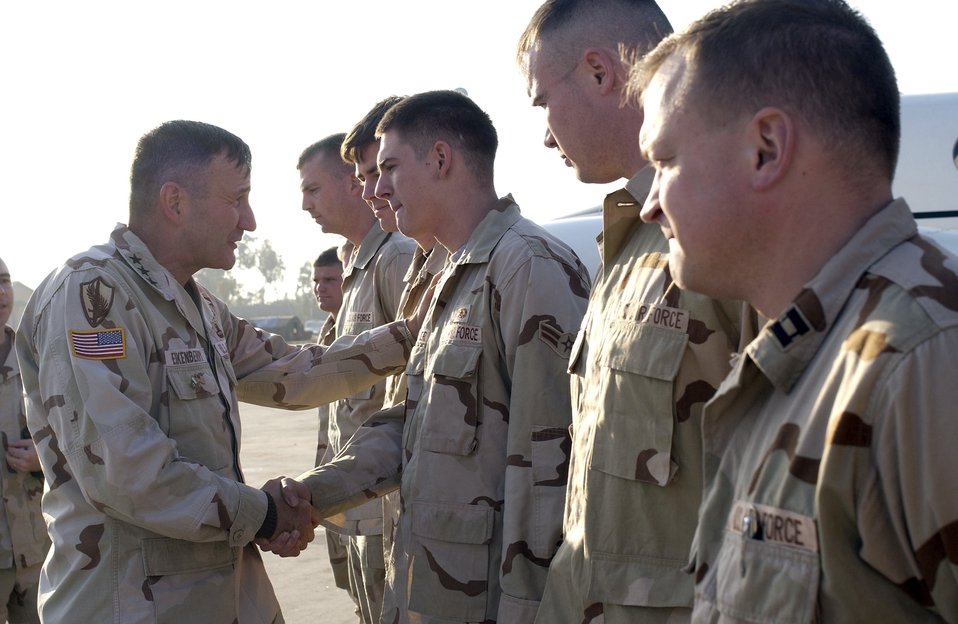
Pakistan relief

CHAKALA AIR BASE, Pakistan -- U.S. Army Lt. Gen. Karl Eikenberry thanks Airmen for the job they have done moving tons of humanitarian supplies. Airmen arrived here to set up airlift operations after a 7.6 earthquake devastated the region Oct. 8. The general commands Combined Forces Command-Afghanistan in Kabul, Afghanistan.